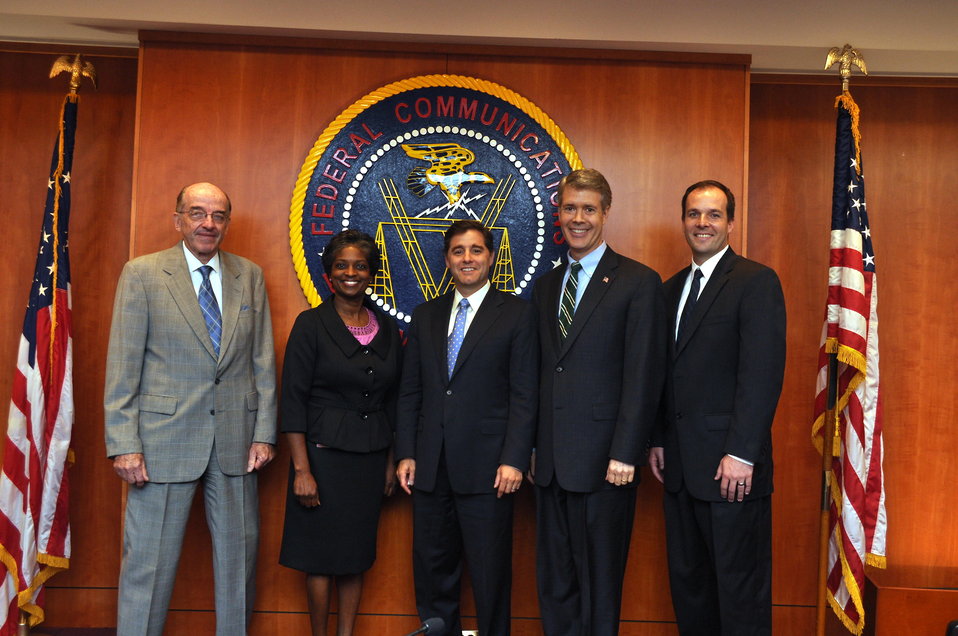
Engineers and Economists

At the August, 2011 Open Meeting the FCC recognized engineers and economists.